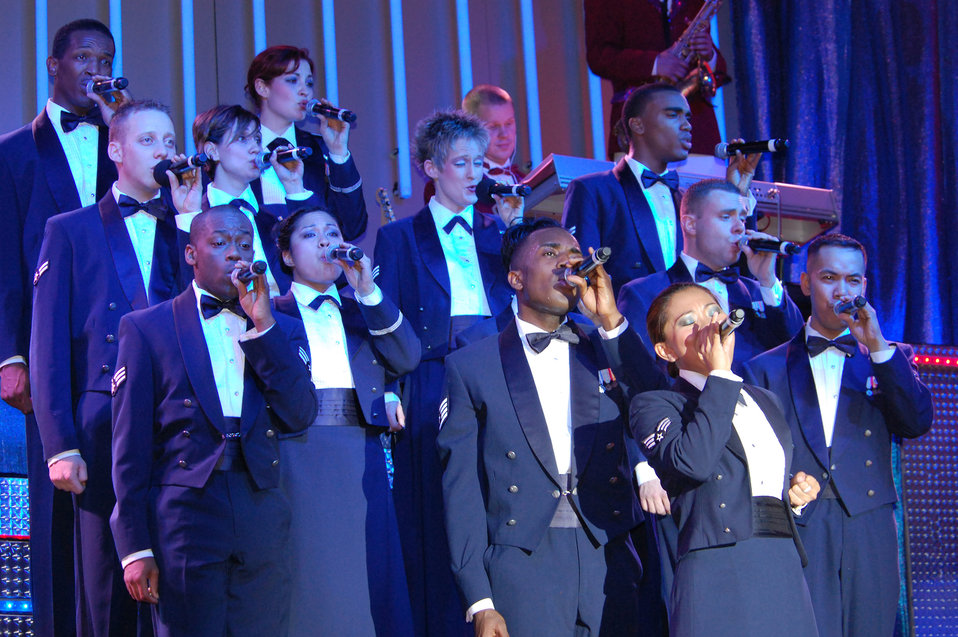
Tops In Blue Airmen entertain forces in South Korea

Members of Tops In Blue perform their